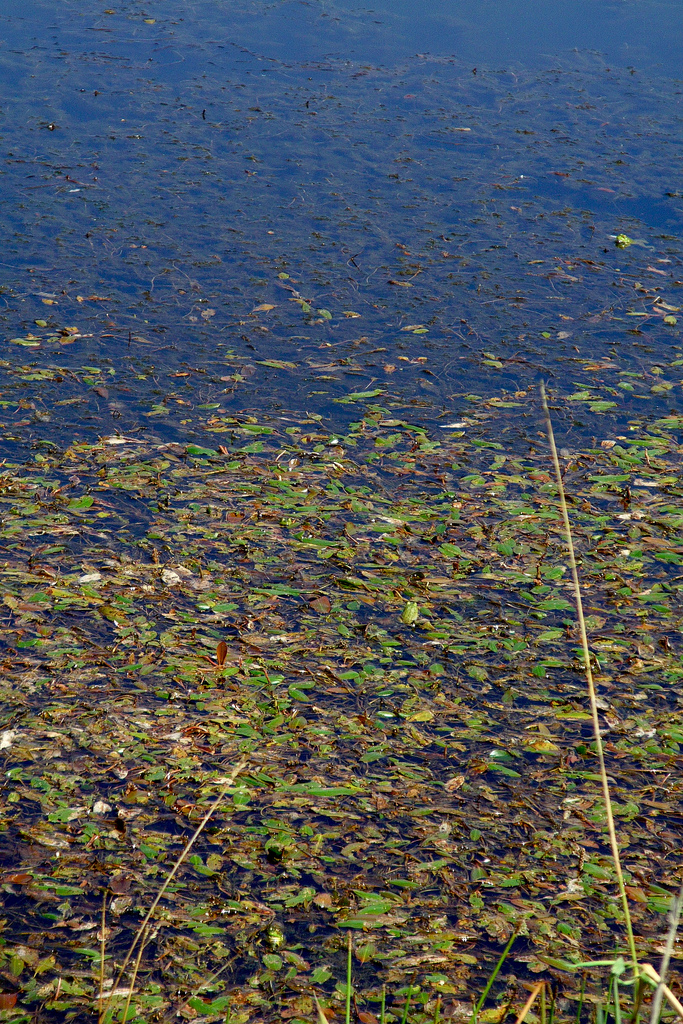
A nutria's home on the Tualatin River National Wildlife Refuge.